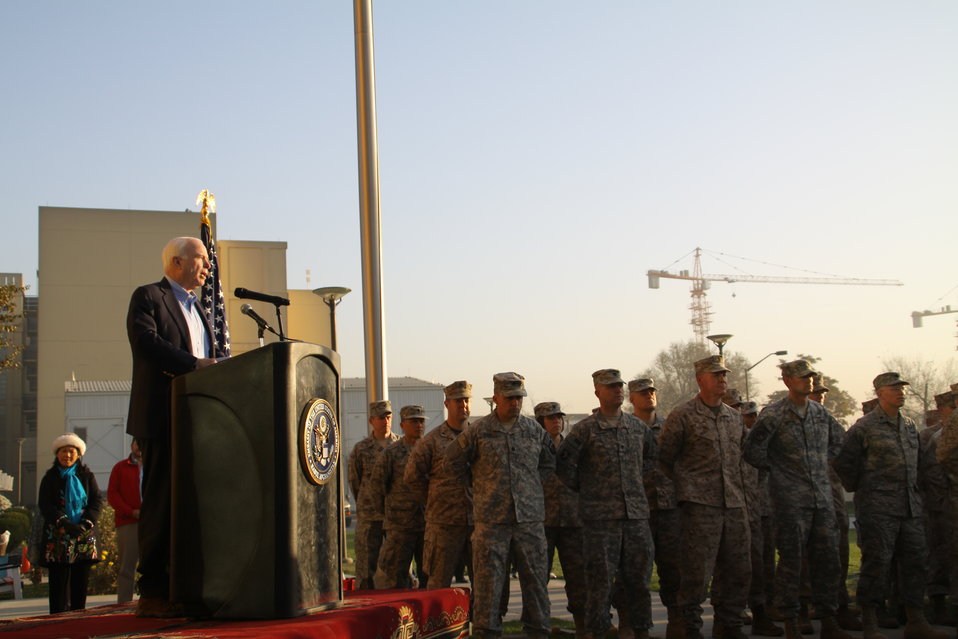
Senator McCain